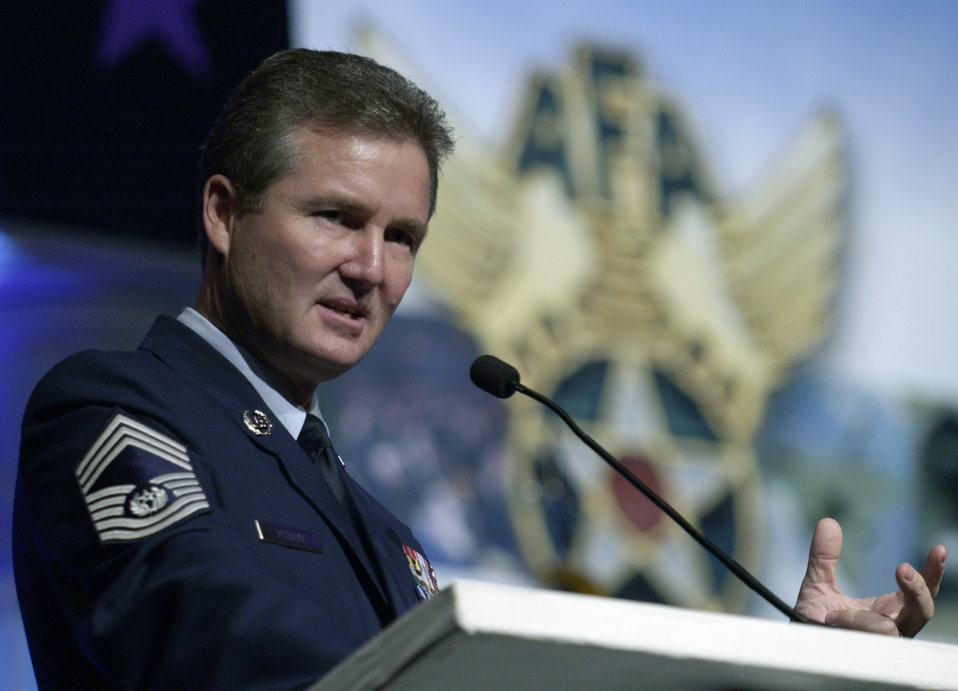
Command chiefs address Airmen's concerns

WASHINGTON -- Chief Master Sgt. of the Air Force Gerald R. Murray joined command chief master sergeants from Air Force major commands at a forum during the Air Force Association's 2004 Air and Space Conference and Technology Exposition here Sept. 13.